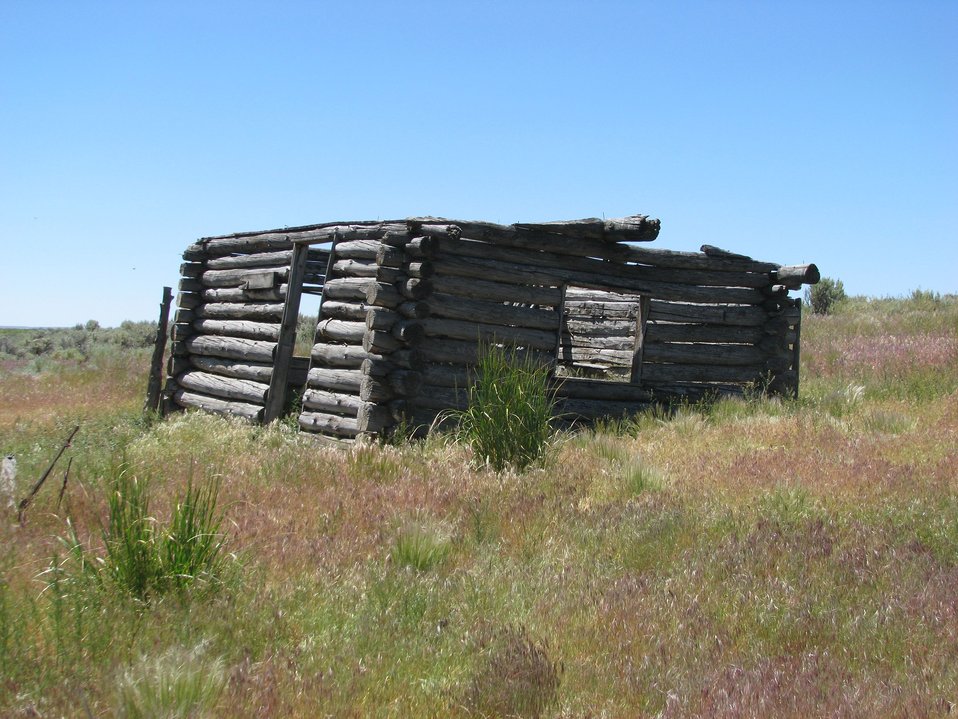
Anna Flook Homestead 2

Located on what is now Hart Mountain National Antelope Refuge, Oregon